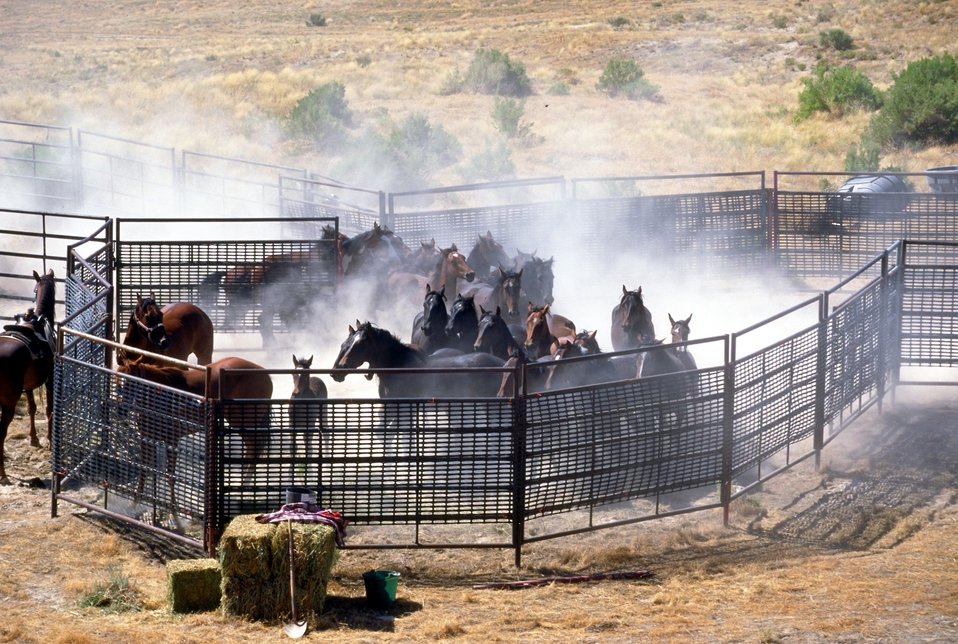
Wild Horse gather, Cedar Mountains.